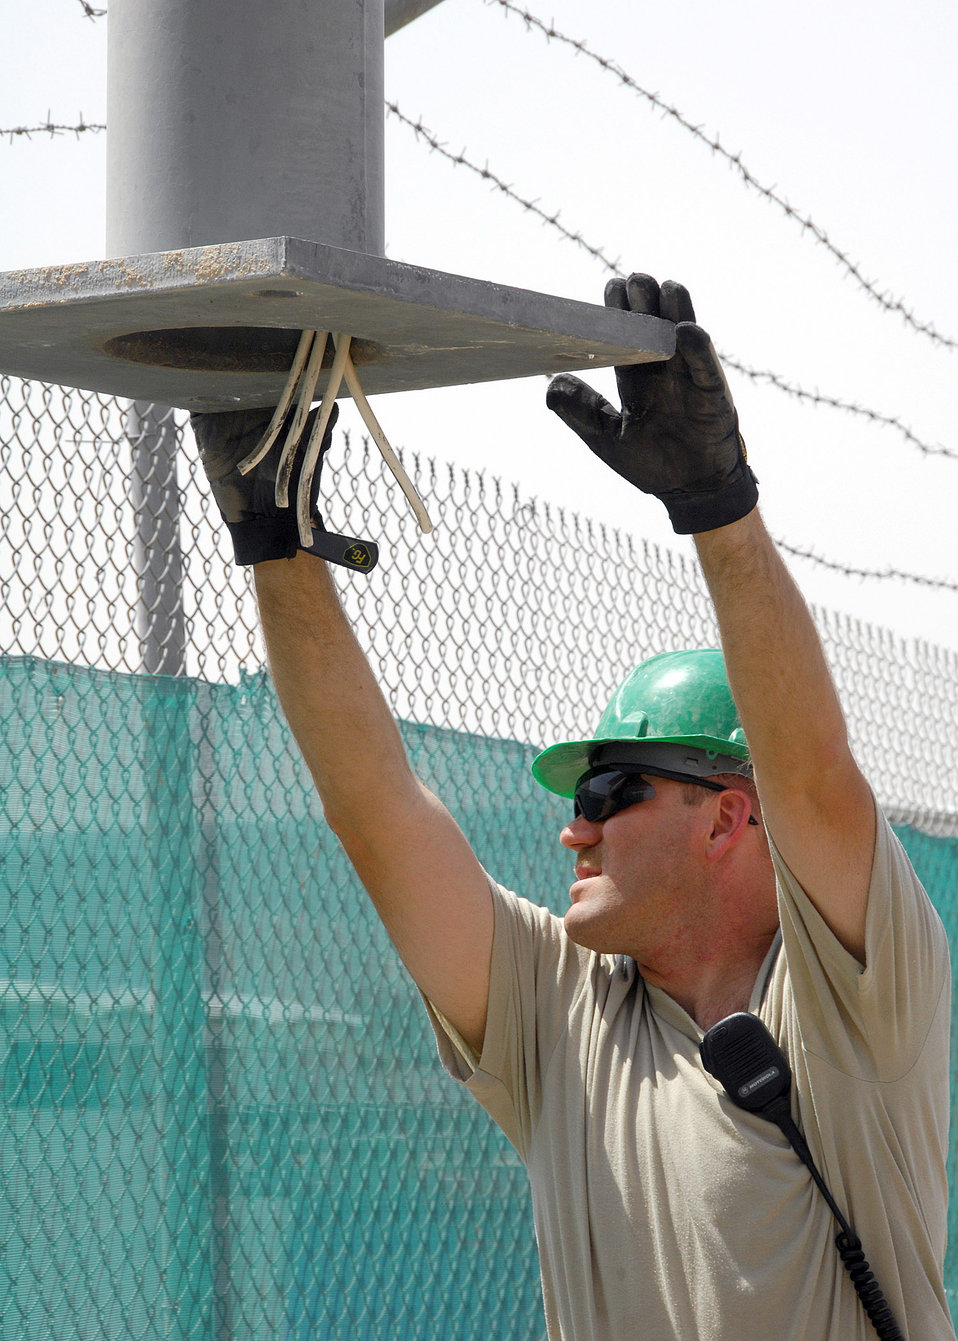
Keeping the lights on

Master Sgt. Steven Gaskill steadies a light pole while it's lifted over a fence Aug. 23 at an air base in Southwest Asia. The installation replaced wind-damaged poles in the South Korean air force compound, and was a joint effort between U.S. and South Korean Airmen. Sergeant Gaskill is deployed from the New Jersey Air National Guard, and he's assigned to the 386th Expeditionary Civil Engineer Squadron,